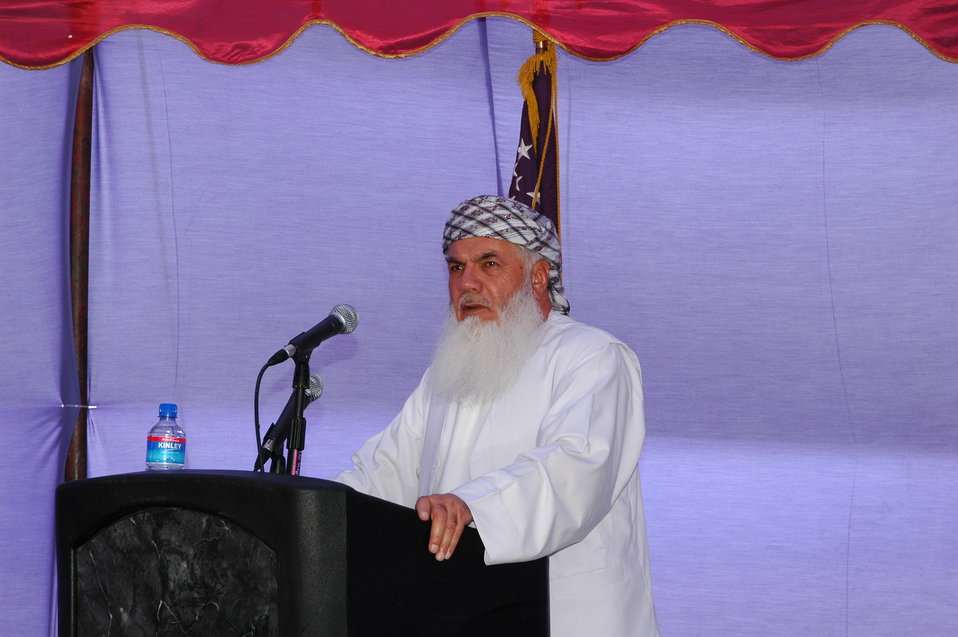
105 MW Tarakhil Power Plant Handover